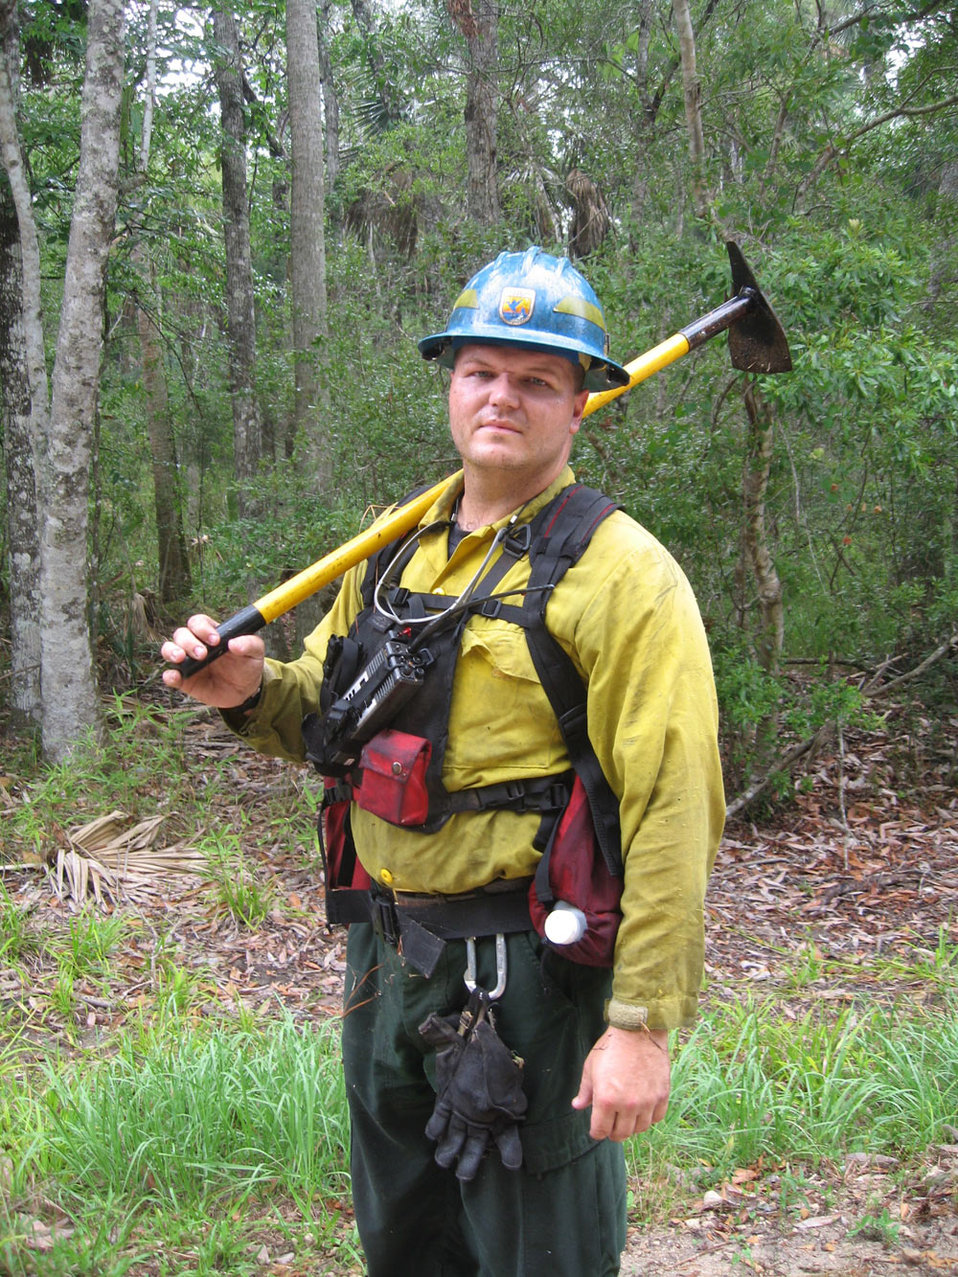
Bart Rye-Southeast Region

Army veteran Bart Rye now works at St. Marks National Wildlife Refuge in Florida as a Range/Forestry Technician (Fire).